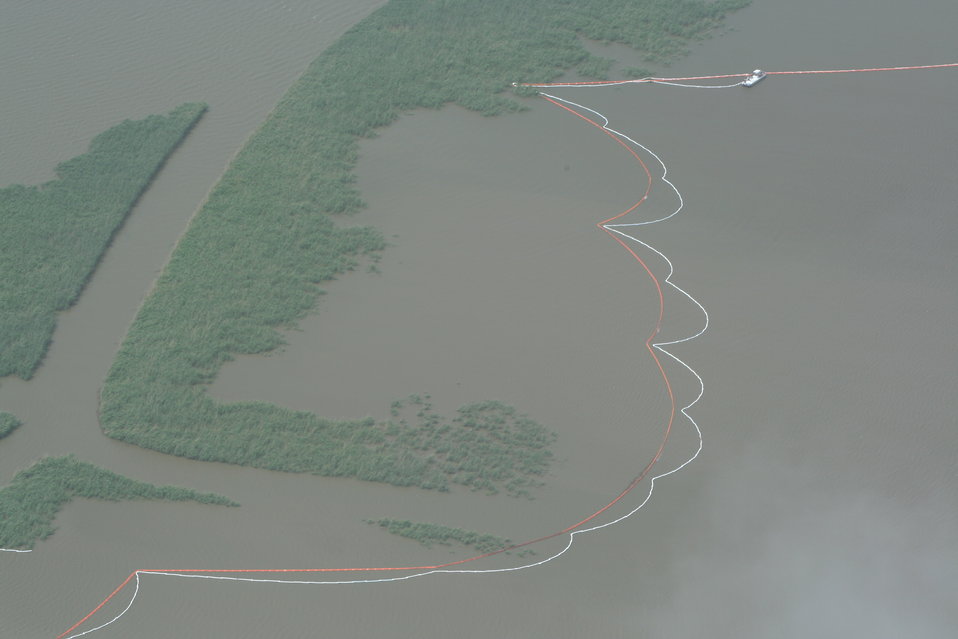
Oil booms protecting marshland

May 2, 2010 - Oil booms deployed East of Goose Island

Photo taken from U.S. EPA's Airborne Spectralphotometric Environmental Collection Technology (ASPECT) aircraft.